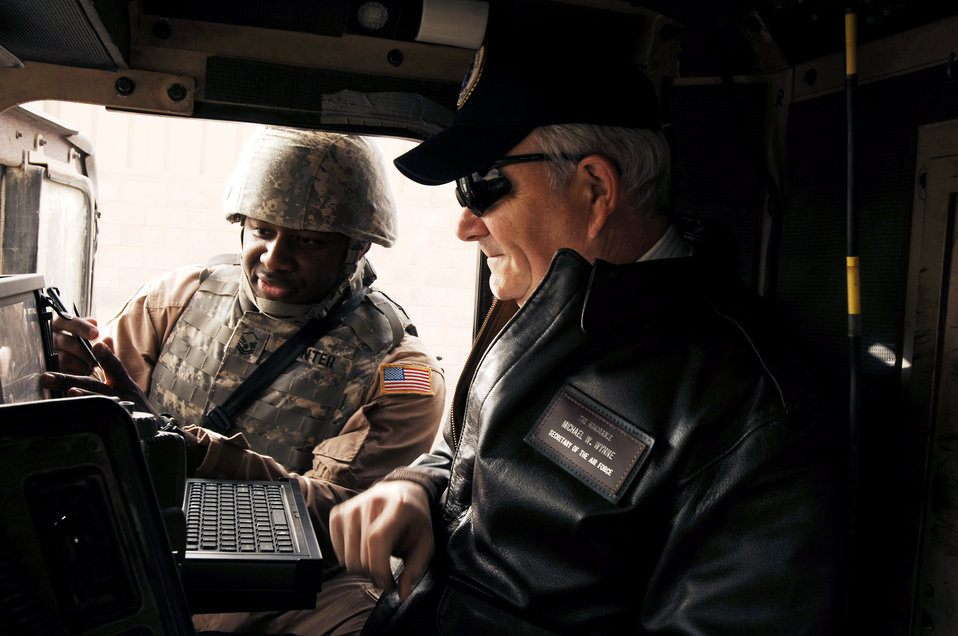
SECAF addresses Deployed Airmen

Master Sgt. Kory Hunter briefs Secretary of the Air Force Michael Wynne about the mobile tracking system inside a M915 semi-tractor trailer during the SECAFs visit Feb. 1. The SECAF spoke with more than 400 Airmen during his visit and gained greater insight on the 6,800 plus Airmen deployed throughout Southwest Asia in non-traditional Air Force functions. Sergeant Hunter is a convoy commander from the 586th Expeditionary Logistics Readiness Squadron, 70th Medium Truck Detachment.